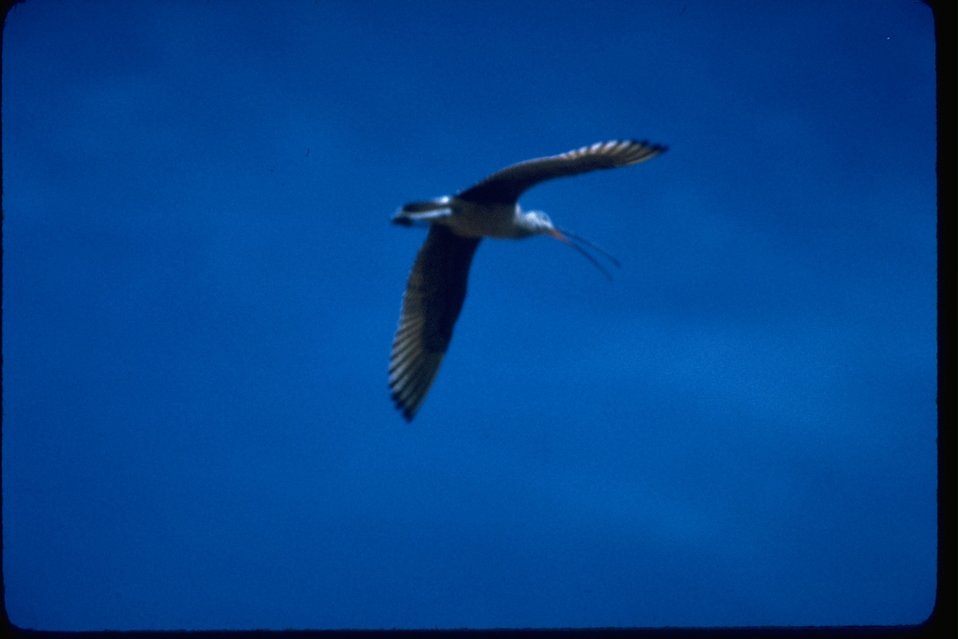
A long-billed Curlew soaring in the sky.